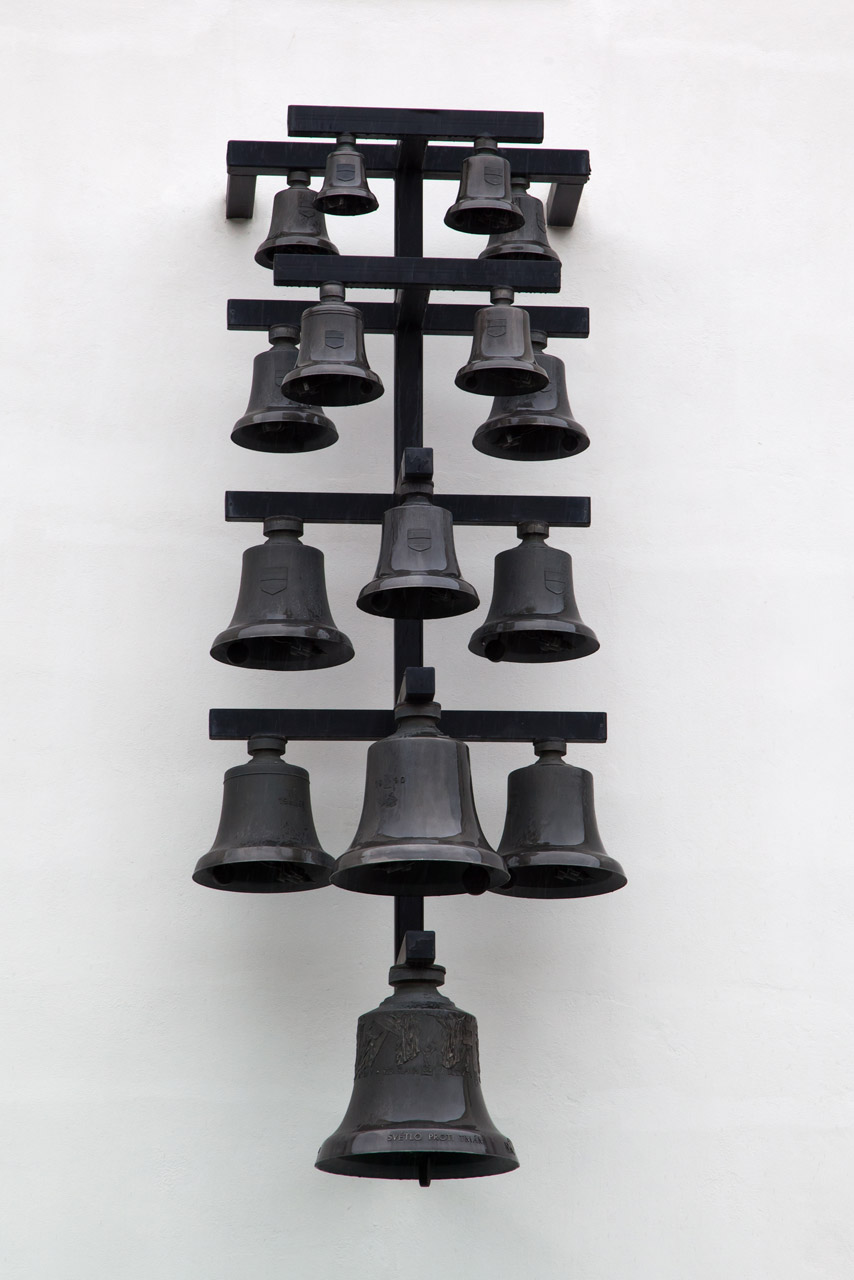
Carillon bells

Carillon on spilberk castle in brno - czech republic.